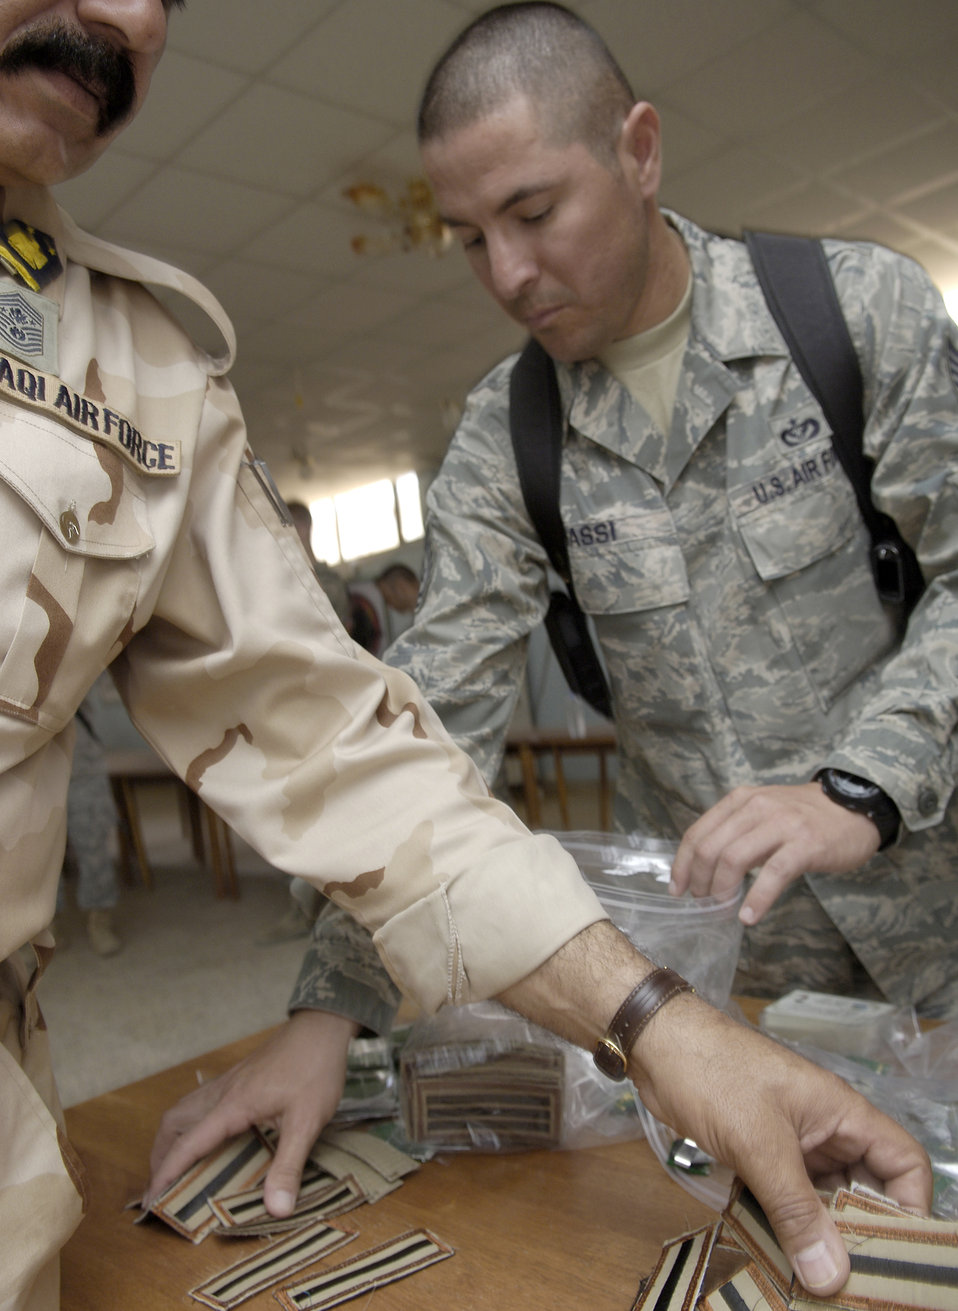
PME graduation

Tech. Sgt. Lewis Isassi and the Iraqi air force's top enlisted airman hand out rank insignias to graduates of a two-week enlisted professional development course May 28, 2011, at New Al-Muthana Air Base, Iraq. More than a dozen Iraq Training and Advisory Mission-Air advisers taught the course. Sergeant Isassi is a 321st Expeditionary Mission Support Advisory Group civil engineer adviser.